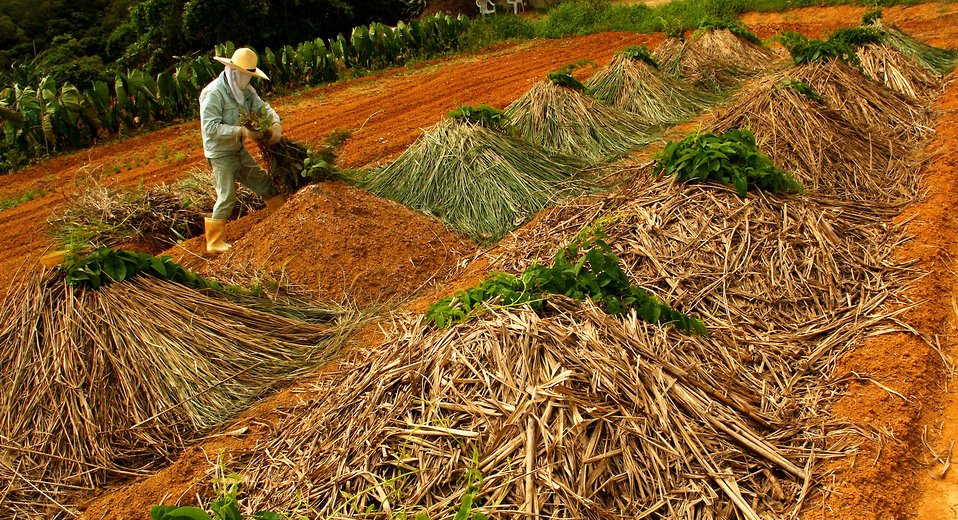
Tacit farmers return to their roots at air base

A tacit farmer piles dead leaves on mounds storing planted yams to keep them moist until harvest time at Kadena Air Base, Japan. Nearly 90 acres of land located in the munitions storage area is used by the tacit farmers to grow crops surrounded by hills and a capturing view of a well-preserved past.